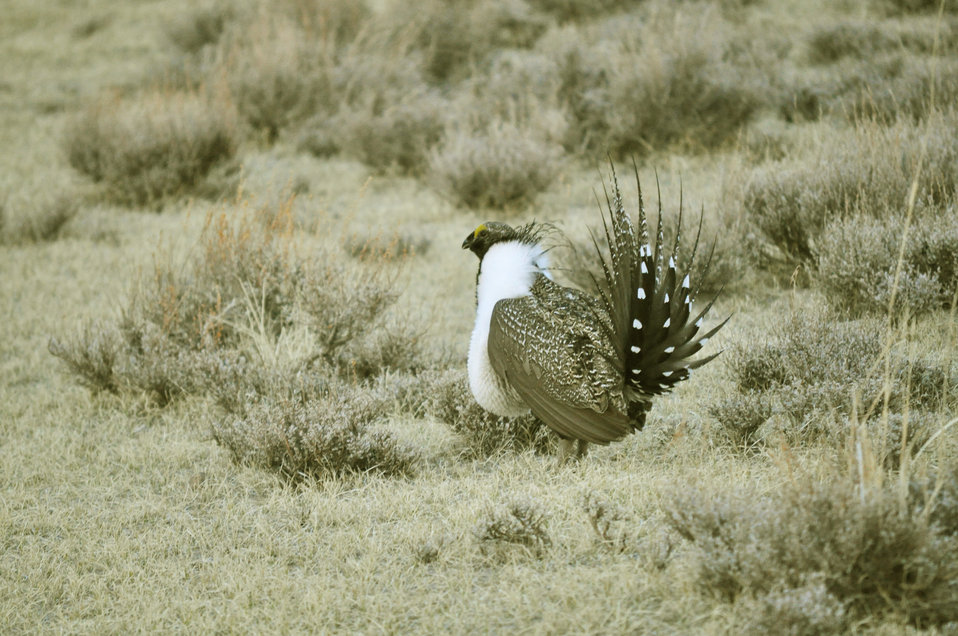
Male greater sage-grouse struts at lek (dancing or mating grounds) to attract females near Bodie, California.